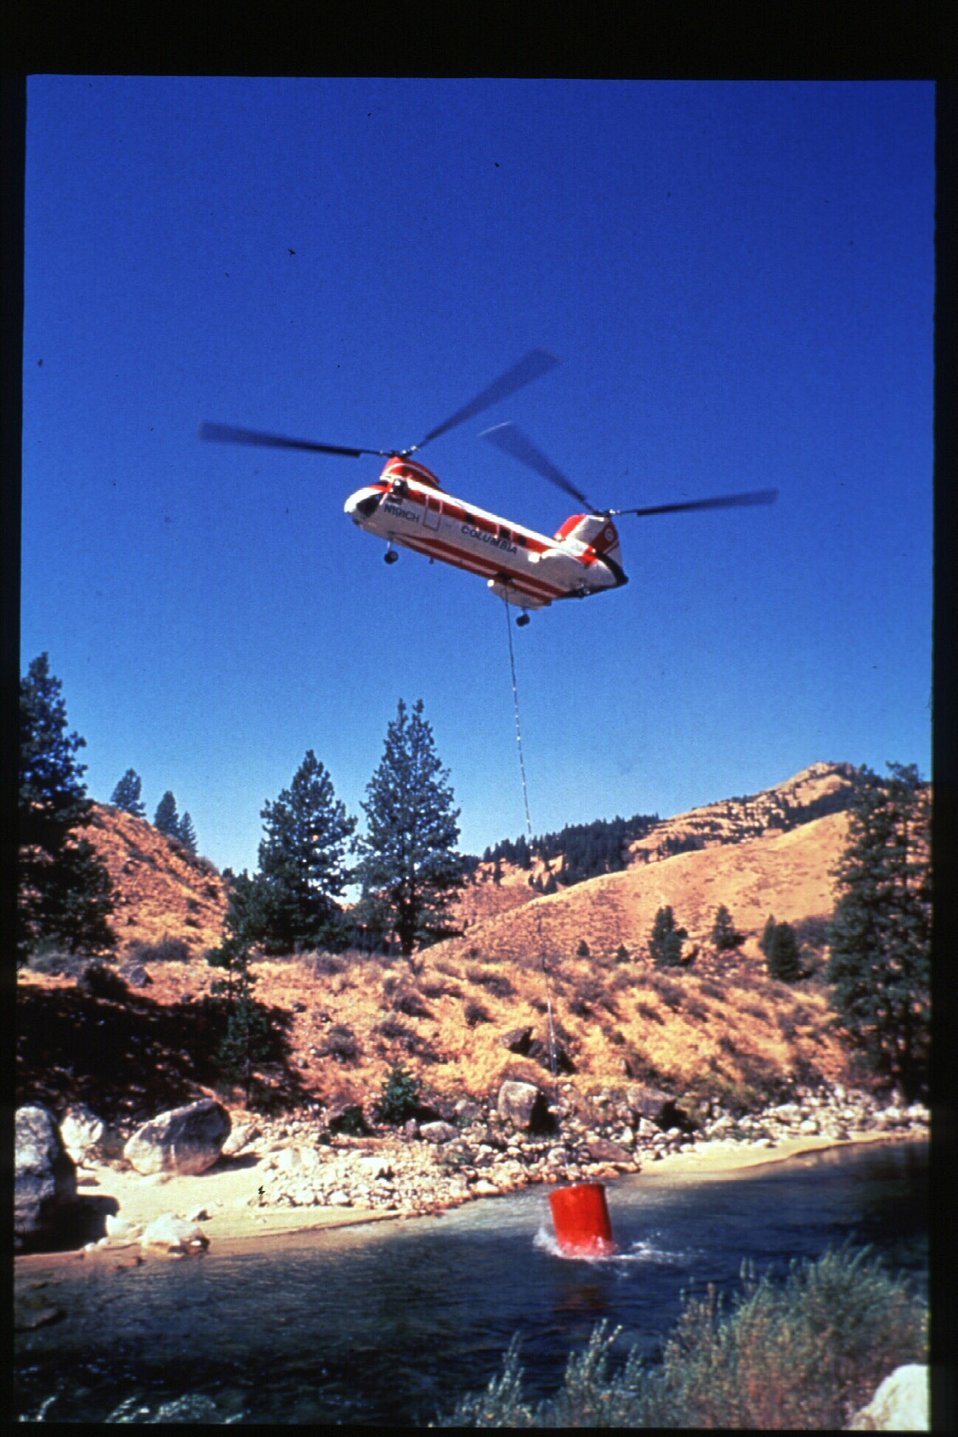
Boise Foothills Fire Danskin Mountains and South Fork of Boise River Helicopter water bucket refill Four River Field Office LSRD Lower Snake River District